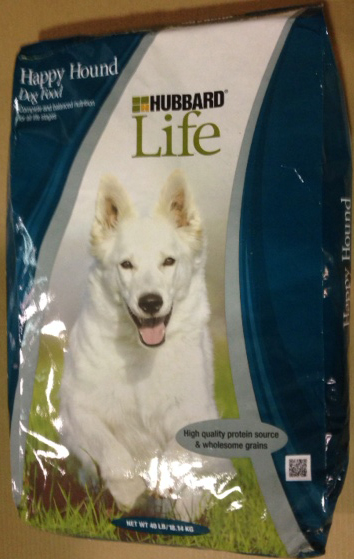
RECALLED – Dog Food, Cat Food

February 5, 2014 – Product Recall – Pro-Pet LLC Recalls a Limited Number of Dry Dog and Cat Foods Due to Possible Salmonella Contamination.